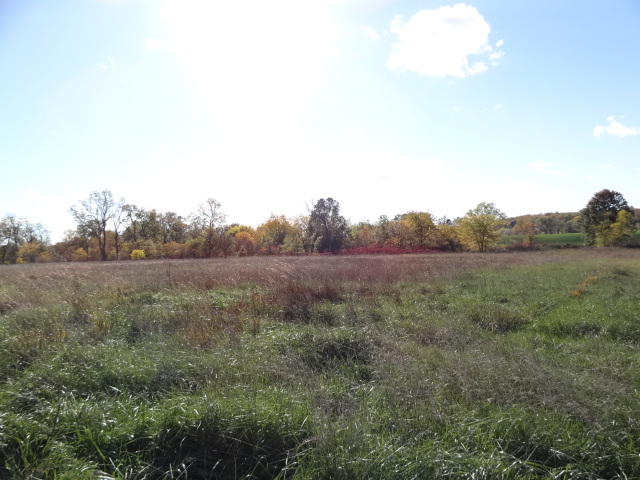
Marais des Cygnes National Wildlife Refuge

Late Summer at Marais des Cygnes National Wildlife Refuge.